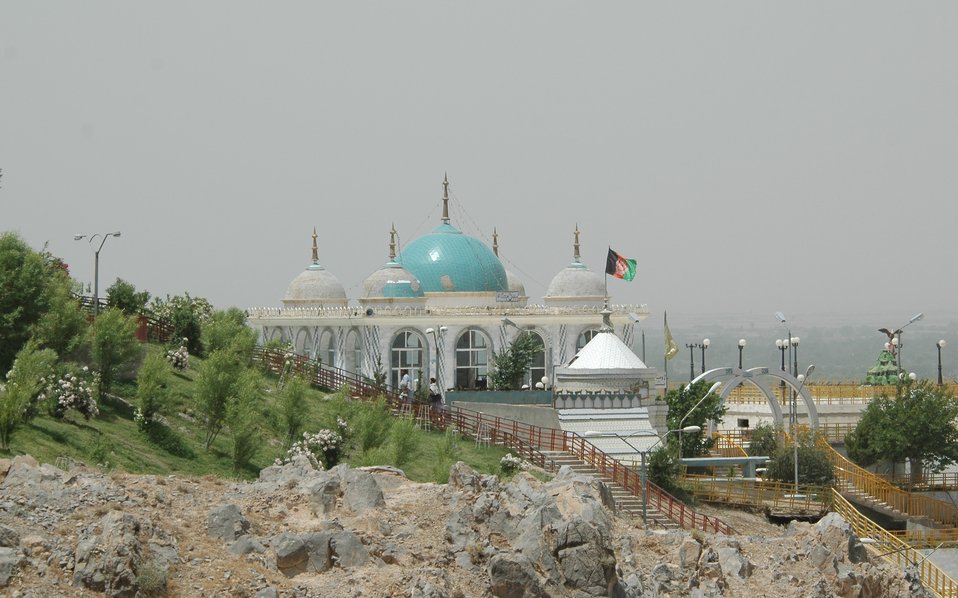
CODEL Berman